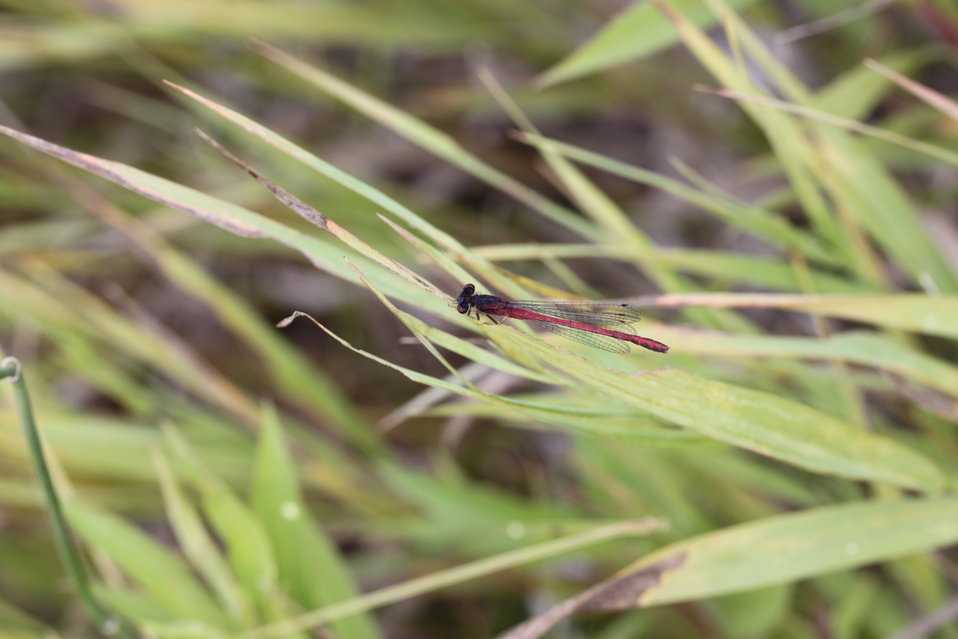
Western Red Damselfly

Amphiagrion abbreviatum found along irrigation ditch on Refuge; seems to have affinity for these ditches.